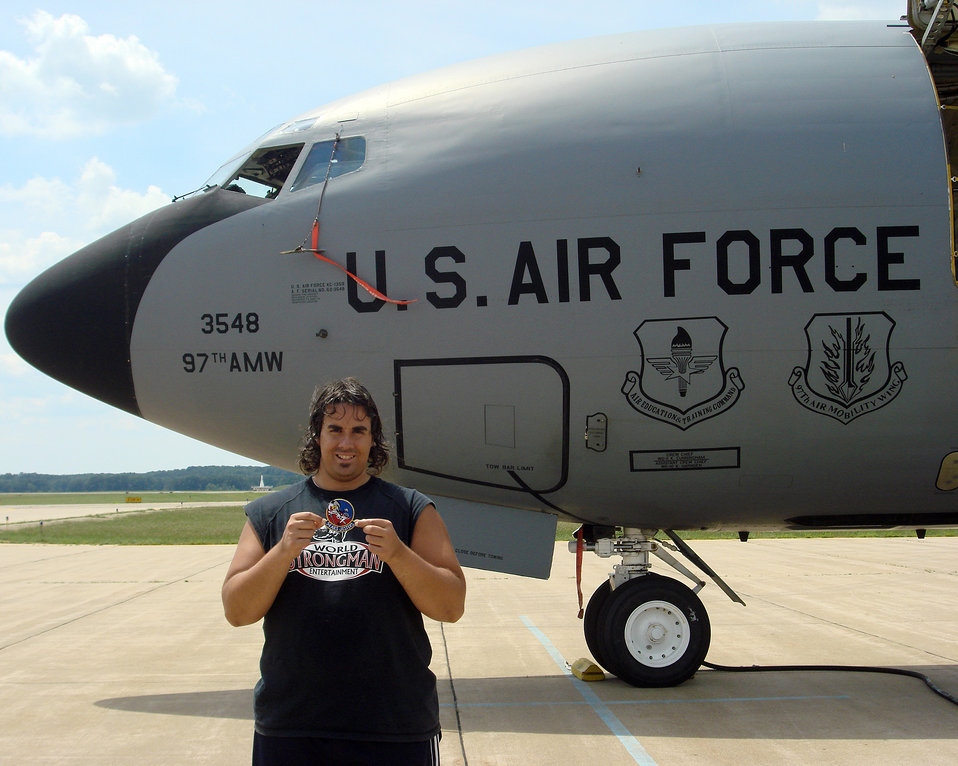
KC-135 and the Strongman

Strongman Mark Kirsch holds a 54th Air Refueling Squadron patch while standing in front of a KC-135 Stratotanker from Altus Air Force Base, Okla., July 1, 2011, during the Battle Creek Air Show and Balloon Festival in Battle Creek, Mich. Kirsch pulled the 140,000 pound aircraft five times during the air show.